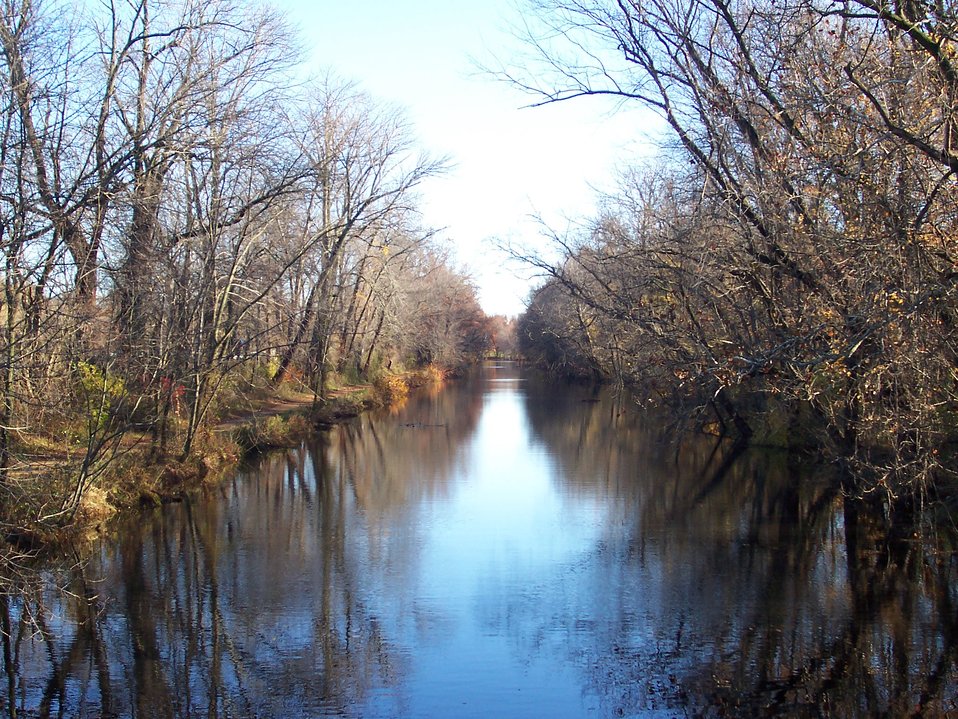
Delaware and Raritan Canal between Lawrenceville and Princeton. Towpath is on the left.